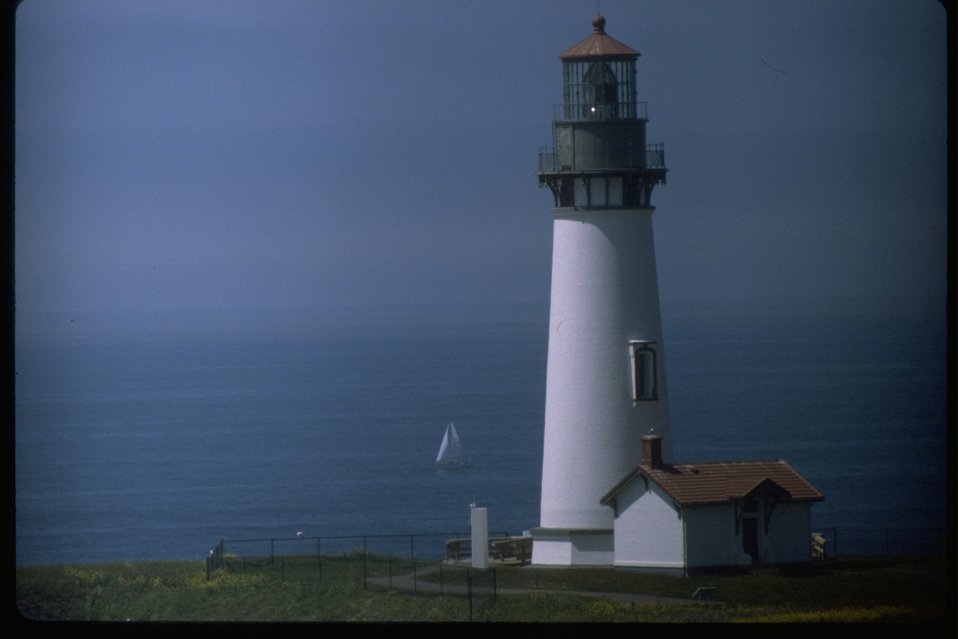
Horizontal shot of Yaquina Head lighthouse with a sailboat off shore.